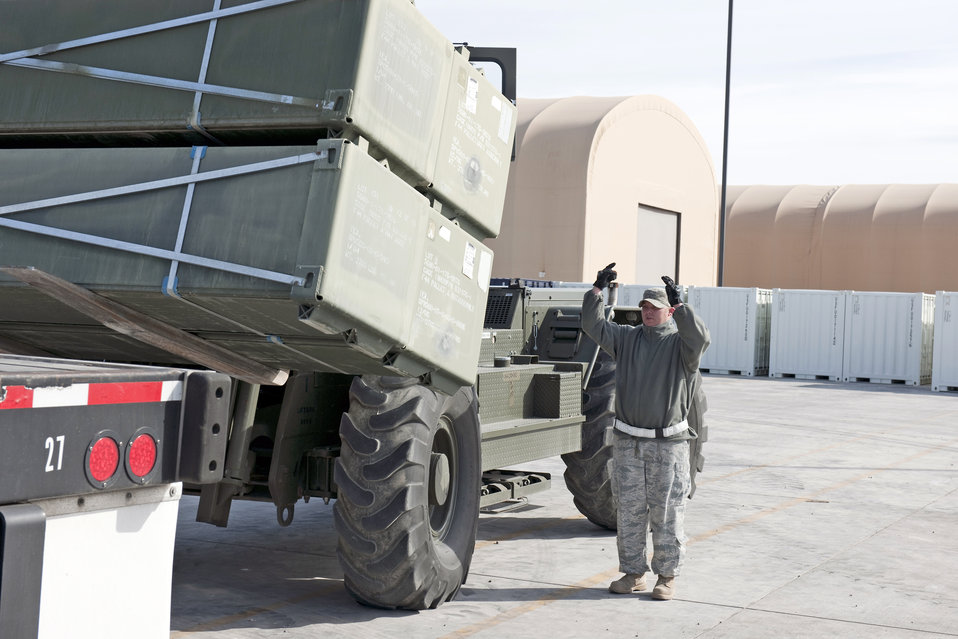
Airmen prepare BEAR base for troops in Afghanistan

Senior Airman Scottie Owens ground-guides a 13,000 pound loader carrying nearly 11,000 pounds of AM-2 matting onto a flatbed trailer Feb. 24, 2010, at Holloman Air Force Base, N.M. Airman Owens is assigned to the 49th Materiel Maintenance Support Squadron. The 49th MMSS is deploying 480,000 square feet of the matting that will be assembled to create airstrips supporting joint and coalition forces throughout Afghanistan.